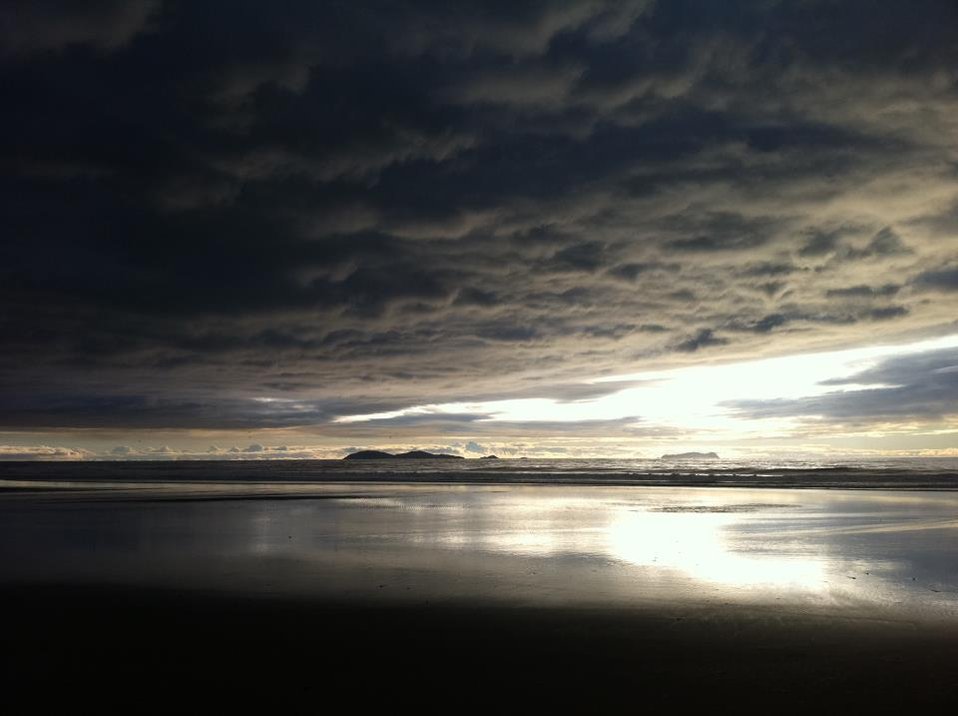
Ocean view at the Tijuana river mouth in December